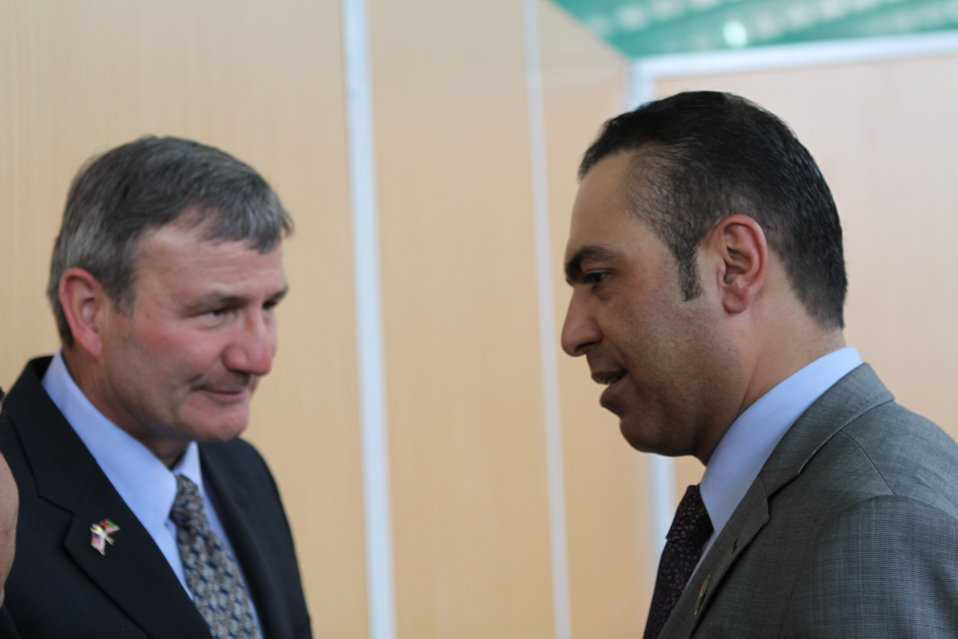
100525 Hirat Marble Conference 552